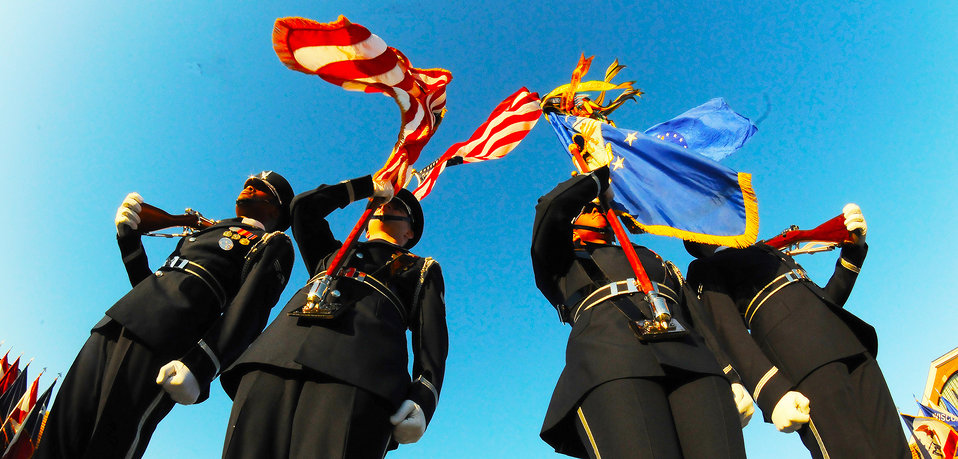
Colors: Out in front

A color guard element trains on the Air Force Honor Guard ceremonial lawn Dec. 17, 2009, at Bolling Air Force Base, D.C. The team's responsibilities include executing military honors for fallen Airmen at Arlington National Cemetery, Va., retirements, promotions, ceremonies at the Tomb of the Unknowns, state dinners and presidential inaugurations.